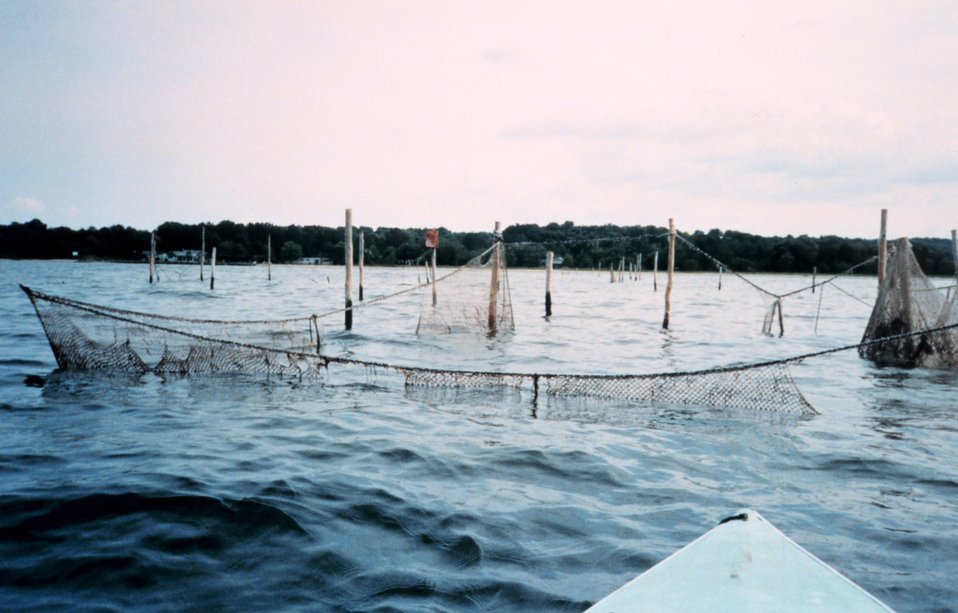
An abandoned pound net. These are used to catch fish, but also entraps many turtles and aquatic birds.